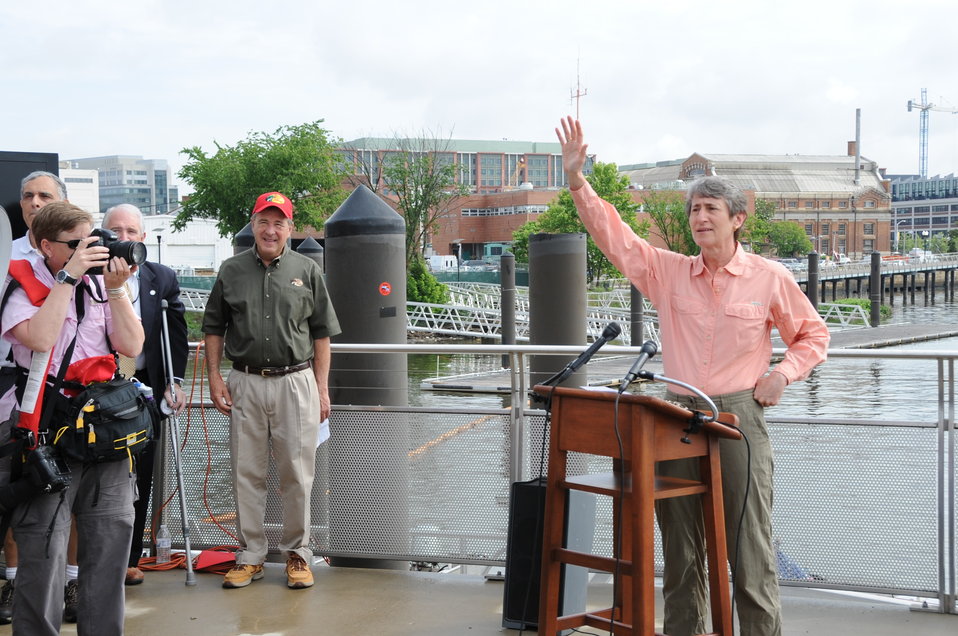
2013 National Fishing and Boating Week

Sally Jewell, Secretary-DOI welcome students at the 2013 National Fish and Boating Week in Washington D.C.